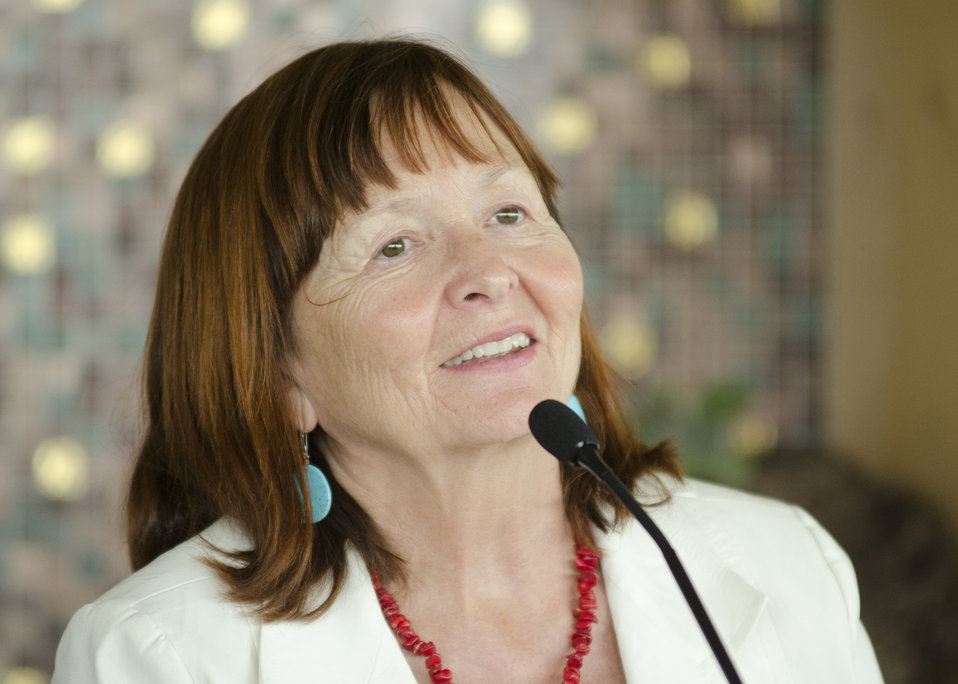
Civil Rights Attorney and former Agricultural Commissioner for North Dakota in Bismarck, ND., Sarah Vogel speaks at the closing session of the first business meeting of the U.S. Department of Agriculture’s (USDA) Council for Native American Farming and Ranching (CNAFR) held at the National Museum of the American Indian in Washington, D.C., on Wednesday, Aug. 15, 2012. CNAFR was created to advise the Secretary on ways to eliminate barriers to participation for Native American Farmers and Ranchers in USDA programs. The Council was established as part of the Keepseagle settlement, and is conducted under the oversight of USDA's Office of Tribal Relations under the Office of the Secretary of Agriculture.